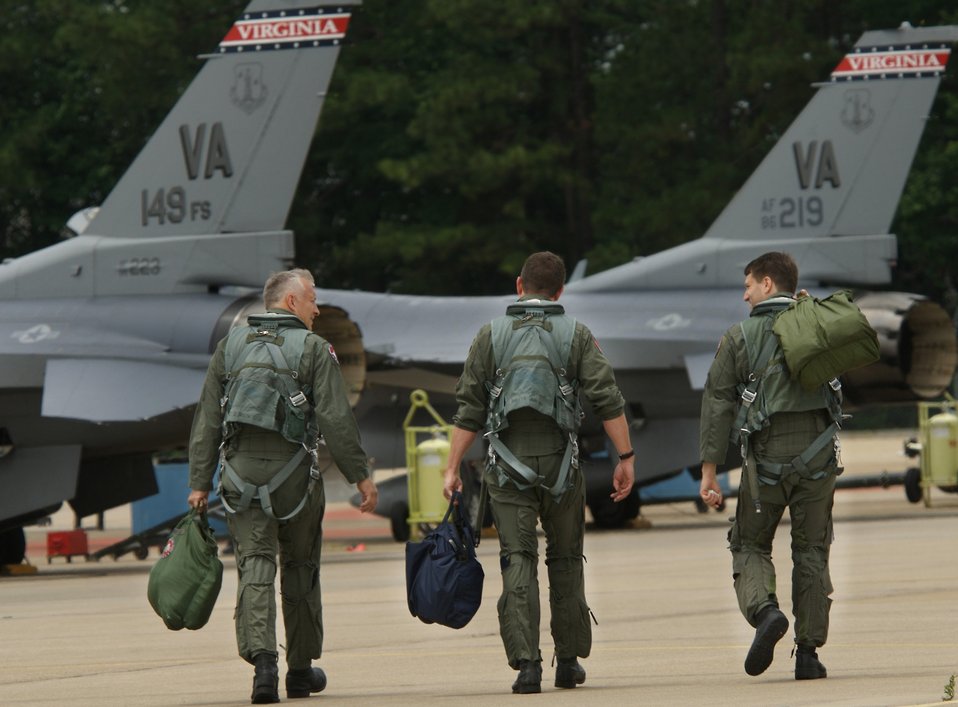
Virginia ANG Unit transitions to F-22

Lt. Col. Mark McCauley (from left), Col. Charles Smith and Maj. Mark Mitchum, pilots with the Virginia Air National Guard's 192nd Fighter Wing walk to their respective F-16 Fighting Falcons June 20 for their final flight in that aircraft. Pilots from the 192nd are transitioning from the F-16 to the F-22 Raptor and belong to the first Air National Guard unit to fly the Raptor.